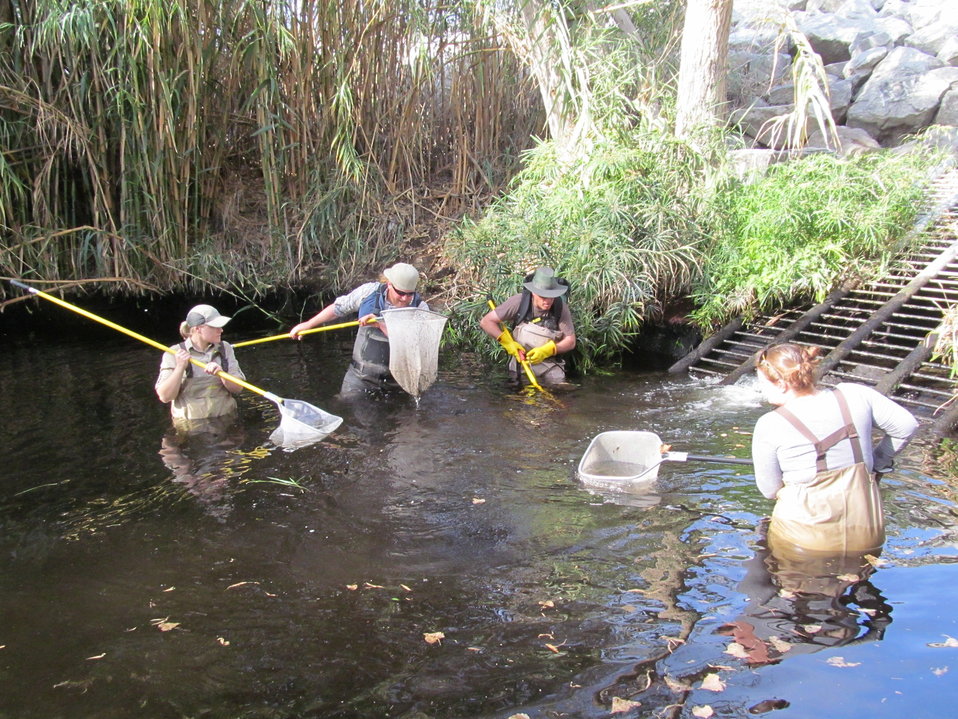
Santa Ana sucker conservation

Biologists from multiple agencies in southern California working together to remove nonnative fish from Santa Ana sucker habitat.